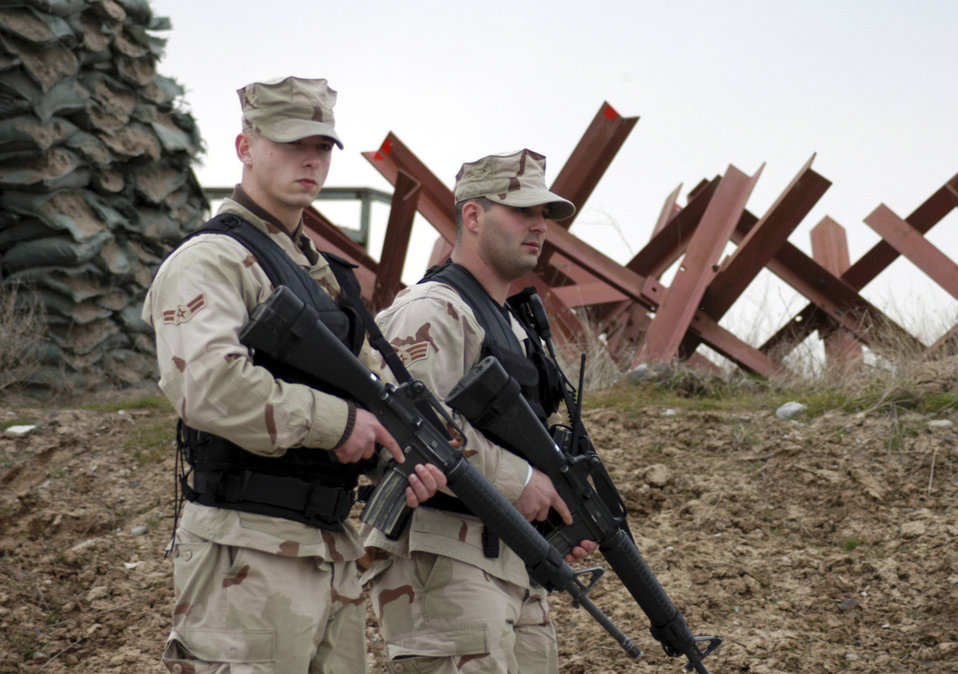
Security patrol

KARSHI-KHANABAD AIR BASE, Uzbekistan -- Airman 1st Class Steven Nicholas and Senior Airman Jeremy Brown check the perimeter of the flightline here during a security forces training exercise Feb. 18. They are security forces Airmen assigned to the 416th Expeditionary Mission Support Squadron here. They are deployed from Eielson Air Force Base, Alaska.